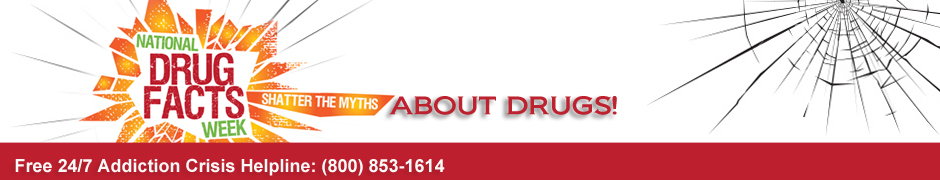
Google -Shatter-The-Myth-Banner

Palm Beach County, Fl. NDFW Events 2013